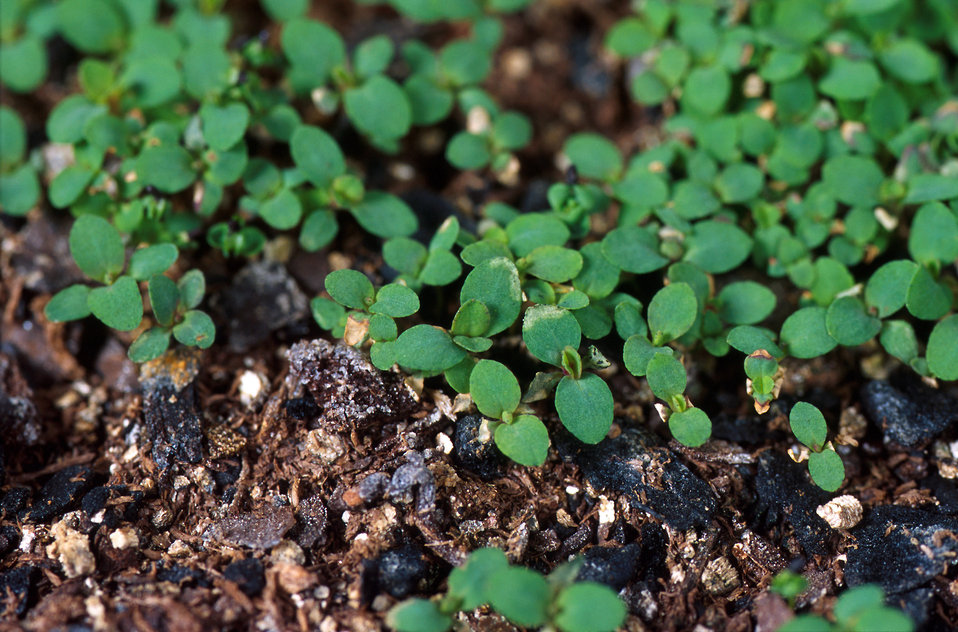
Plantlets of St. John’s Wort (Hypericum perforatum) are a perennial plant. In pastures, St John’s Wort acts as both a toxic and invasive weed. It replaces native plant communities and forage vegetation to the dominating extent of making productive land nonviable or becoming an invasive species in natural habitats and ecosystems. Ingestion by livestock can cause photosensitization, central nervous system depression, spontaneous abortion, and can lead to death.